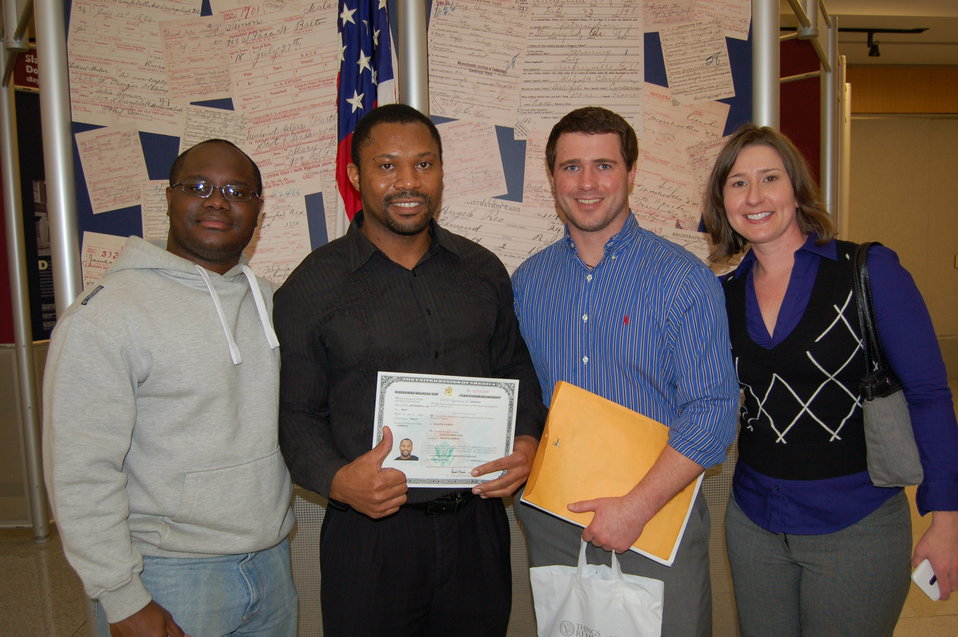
New Citizens